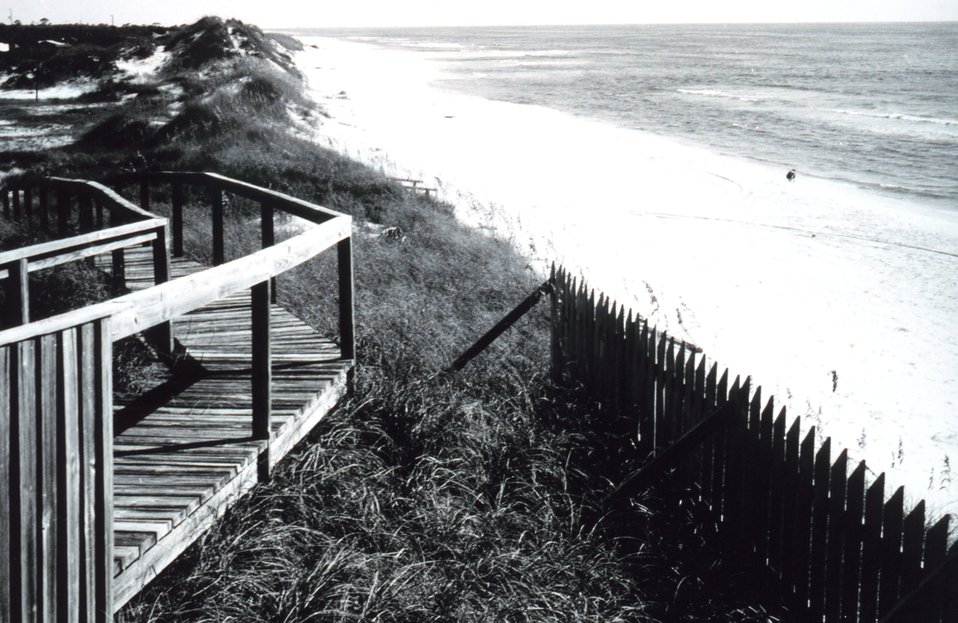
Along the nature walk at St. Joseph Peninsula State Park